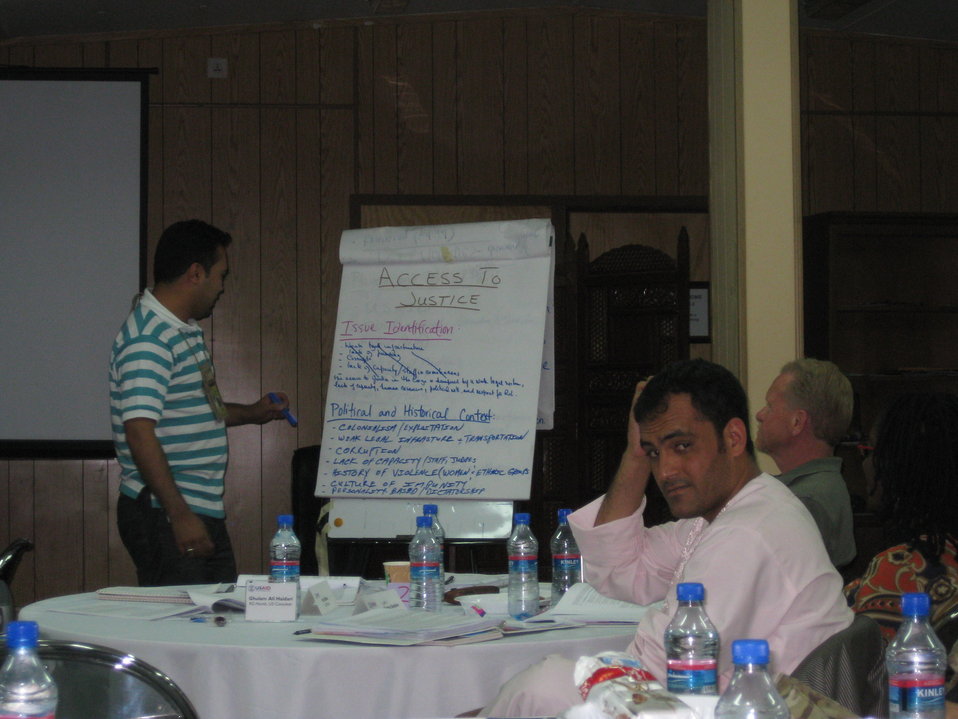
Afghan Youth Voices 031